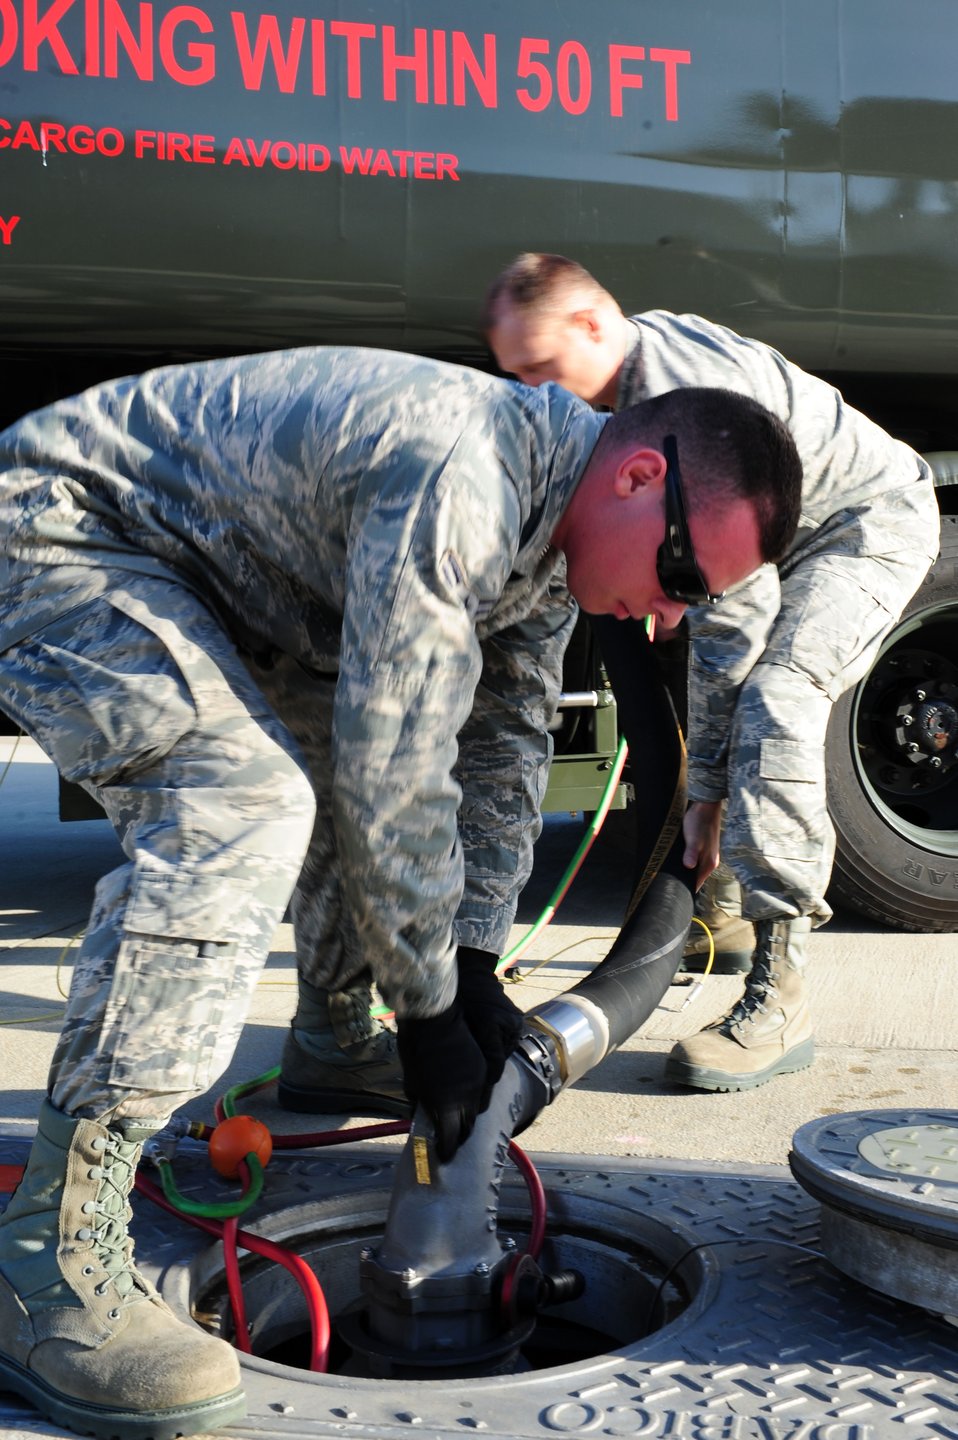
Langley tests new fuel delivery system

Airman 1st Class John Justiniano, a 633rd Logistics Readiness Squadron refueling unit operator, connects a hose to the hydrant fueling system on the flightline at Langley Air Force Base, Va., March 7, 2012. The 633rd LRS is responsible for all the fuels disbursed on the base, whether ground products like gas or diesel, or jet fuel designated for use in Langley AFB’s fighter jets.